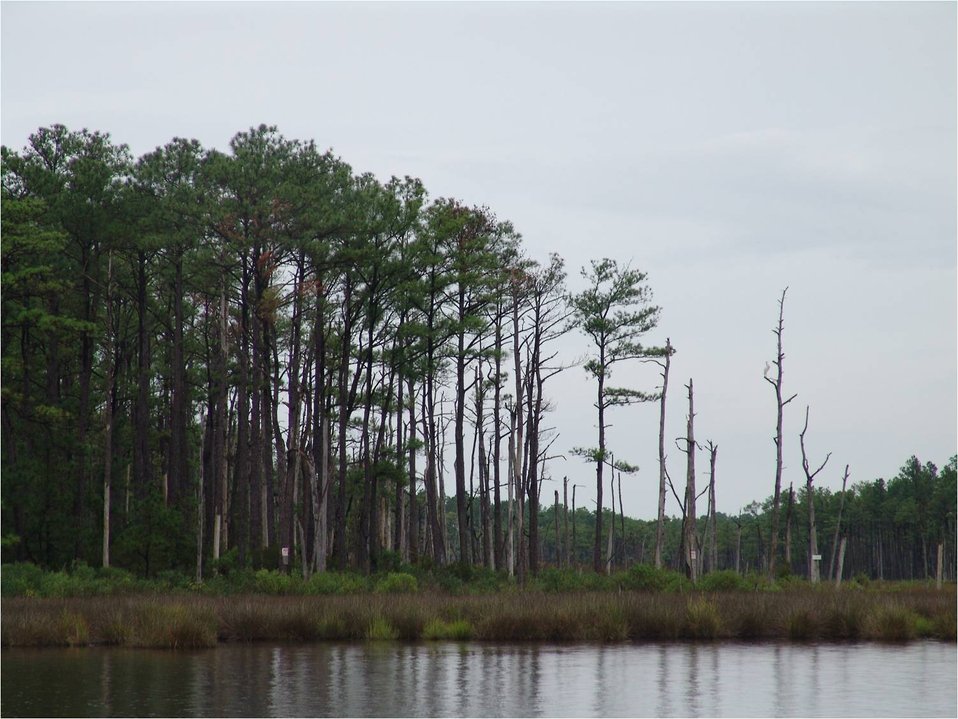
Black Needlerush with Loblolly Pine in the background

Photo taken near Blackwater National Wildlife Refuge.